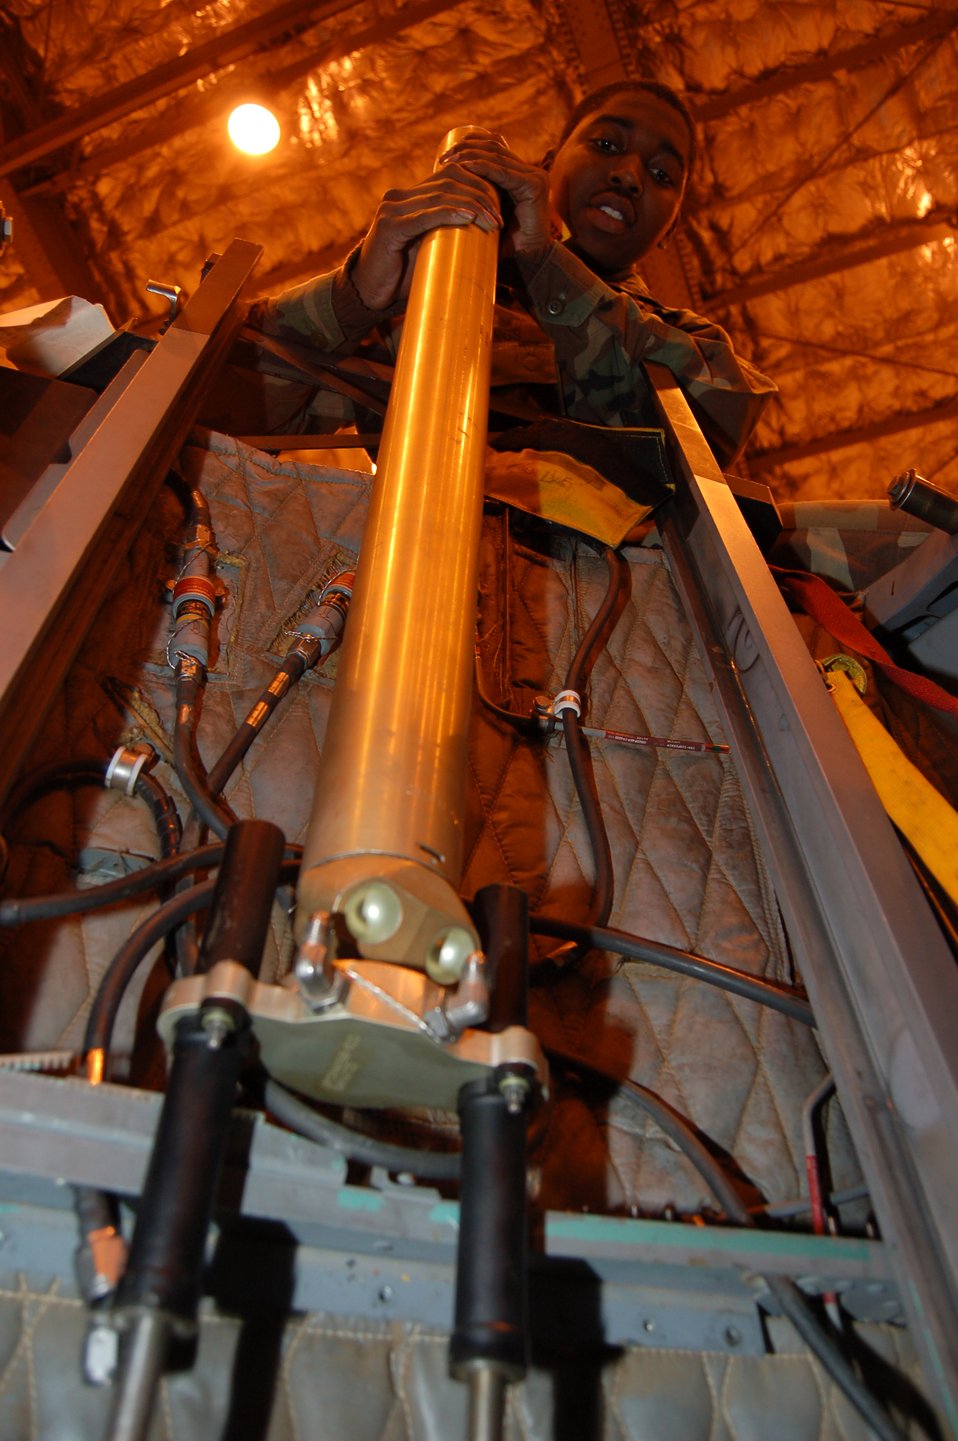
Elmendorf Airmen put AFSO 21 to work

Airman 1st Class Keith Billings verifies the ballistic fitting elbows on a CKU-5B/A rocket catapult are in their proper place during the egress portion of an aircraft transfer inspection Feb. 22 at Elmendorf Air Force Base, Alaska. The rocket catapult ejects the seat in the F-15E Strike Eagle at 43 feet per second. Airman Billings is an aircrew egress journeyman with the 3rd Component Maintenance Squadron.